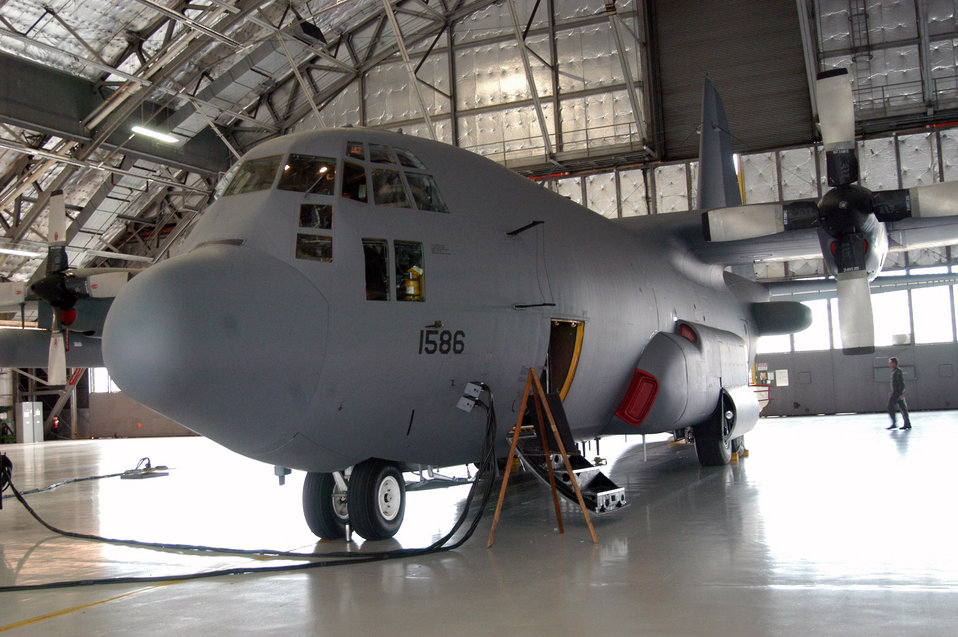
Compass Call

ANDREWS AIR FORCE BASE, Md. - An Air Combat Command Compass Call aircraft was on display here March 31. The aircraft is a C-130 Hercules modified and configured to perform tactical information warfare.